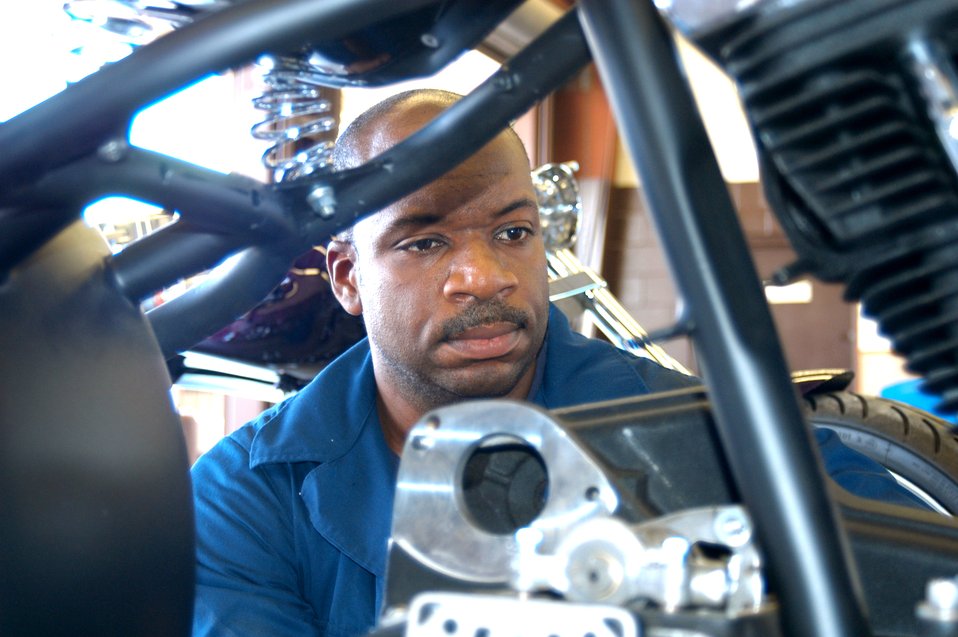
Sergeant's love of steel, paint creates rolling artwork

HICKAM AIR FORCE BASE, Hawaii -- Tech. Sgt. Greg Price mounts a transmission onto an old-school style chopper. He has built 14 bikes like this one in the past four years. He is a C-40B aircraft crew chief with the 15th Airlift Maintenance Squadron here.